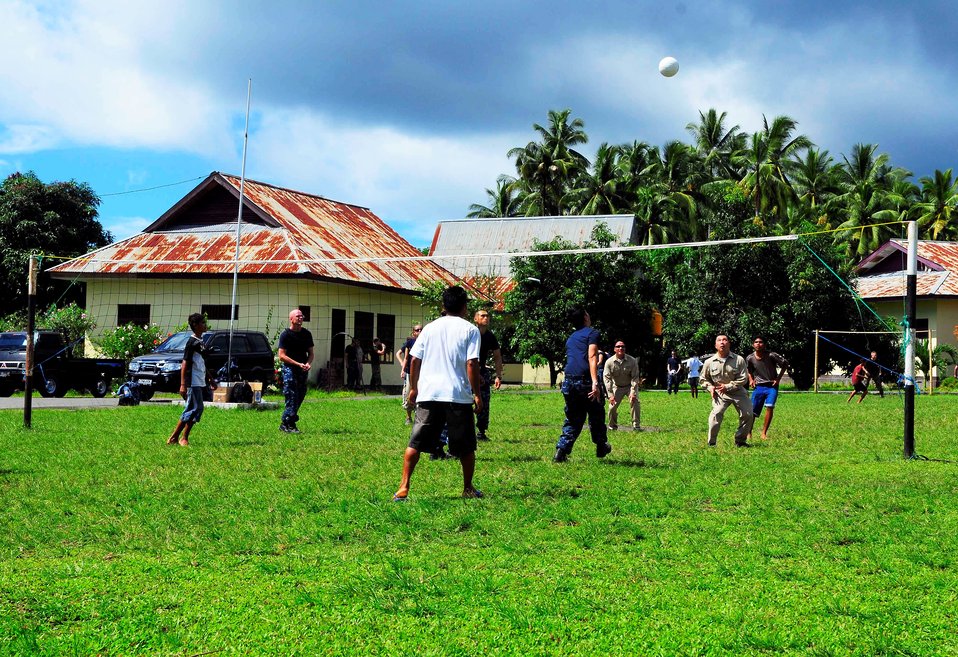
Crewmembers Play Volleyball With Indonesian Children

Crewmembers embarked aboard the Military Sealift Command hospital ship USNS Mercy (T-AH 19) play a friendly game of volleyball with children at a community service event at the Rumah Sejahtera Bagi Anak Orphanage, in support of Pacific Partnership 2010 in Tobelo, Indonesia, on July 14, 2010. Pacific Partnership 2010 is the fifth in a series of annual U.S. Pacific Fleet endeavors conducted in Indonesia as a disaster relief exercise to strengthen regional partnerships.